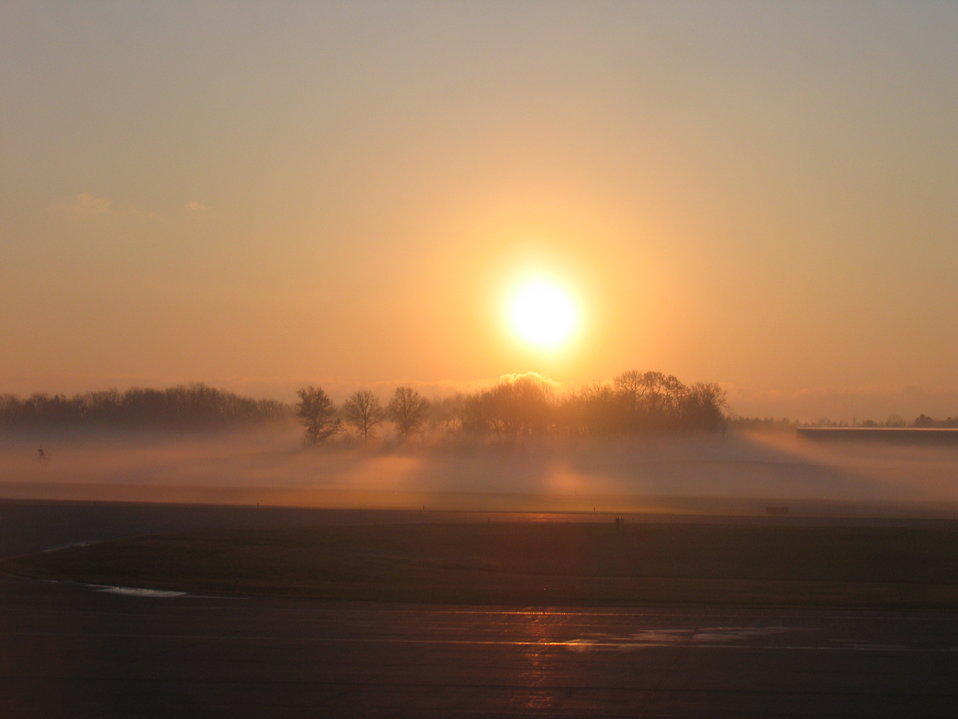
Uploaded by request of Lenore McDonald

Taken in Evansville, Indiana

Taken in the wee hours of the morning at the airport. I arrived early for my flight and watched this sunrise while sitting in a rocking chair waiting for my flight home.